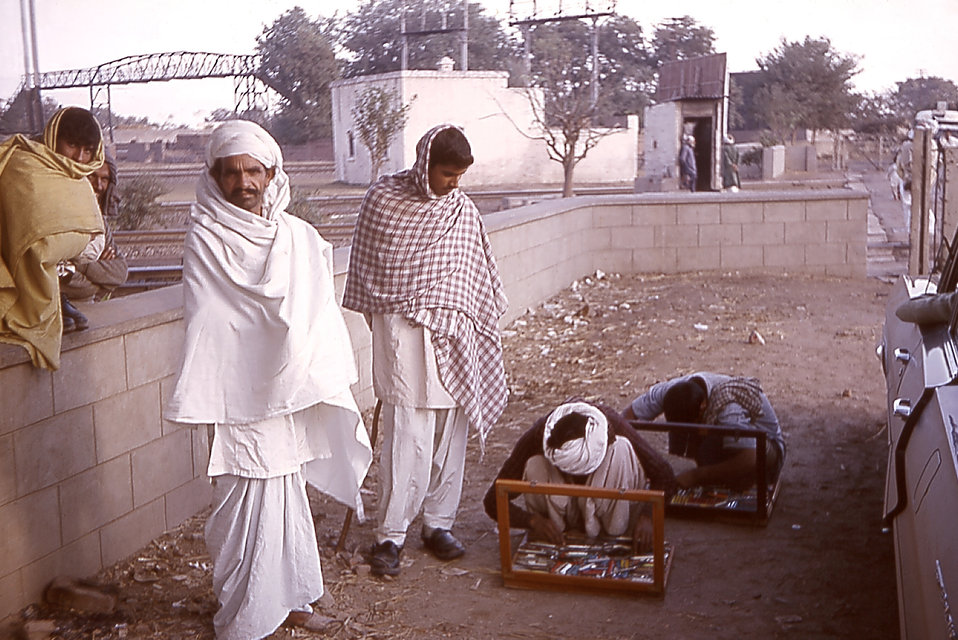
In this 1964 photograph, knife peddlers display their wares in Gujranwalla, West Pakistan, now known as Pakistan (after 1971).